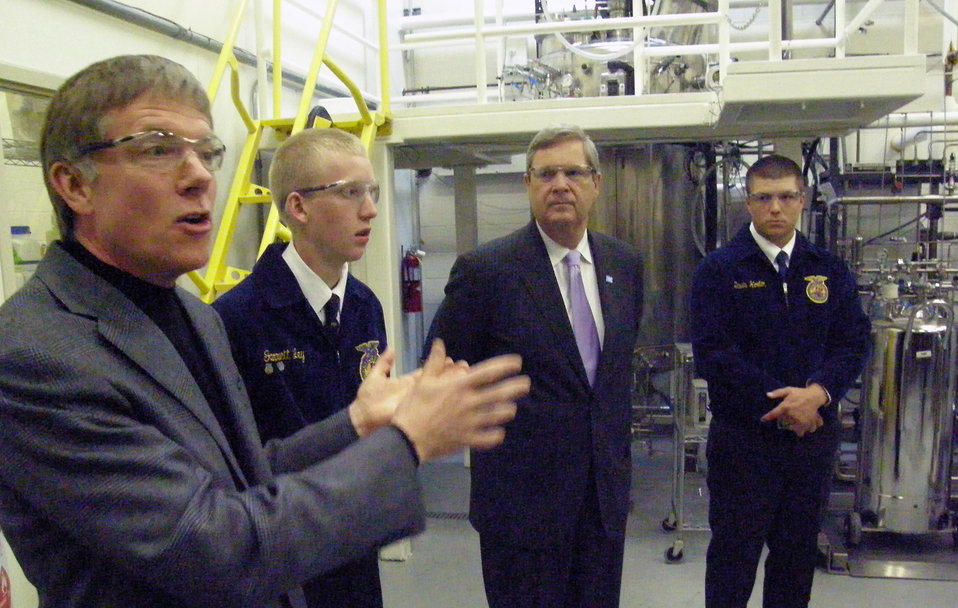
Agriculture Secretary Tom Vilsack toured Kemin Industries in Des Moines, IA on Friday, April 20, 2012. Kemin Industries is an innovative bioscience company that is using plant-based materials to manufacture ingredients used in dietary supplements and in personal care products. Kemin president and chief executive officer Dr. Chris Nelson explained the various operations at the plant to Secretary Vilsack and some FFA students from central Iowa.